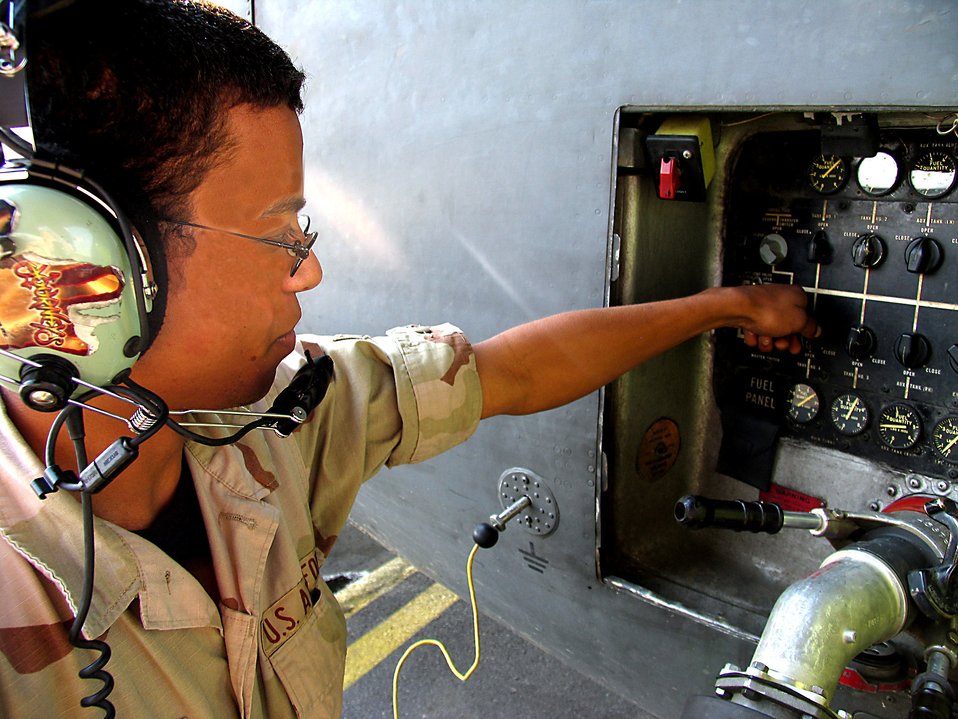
Herc fill up

SOUTHWEST ASIA (AFPN) -- Airman 1st Class Anthony Isom hooks up a refueling nozzle to a C-130 Hercules. Airman Isom is with the 386th Logistics Readiness Squadron fuels flight here. Airman Isom is deployed from Elmendorf Air Force Base, Alaska, in support of Operation Iraqi Freedom.